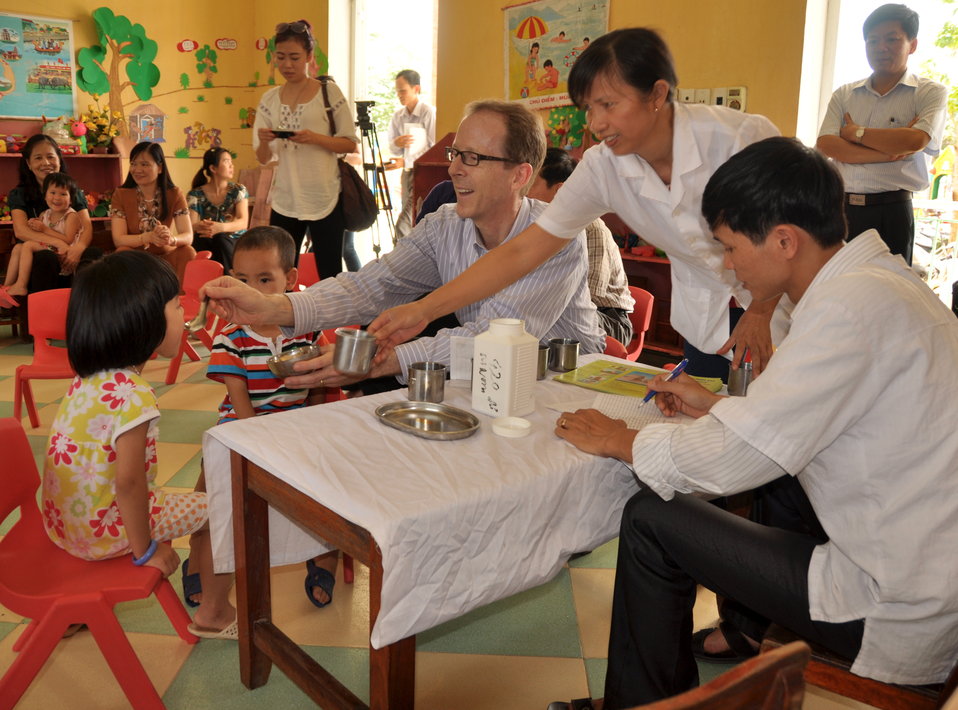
USAID Delivers Deworming Medication to Kindergartners in Nam Dinh Province

USAID Mission Director Joakim Parker gives a dose of deworming medicine to kindergarten children in Nam Dinh Province.